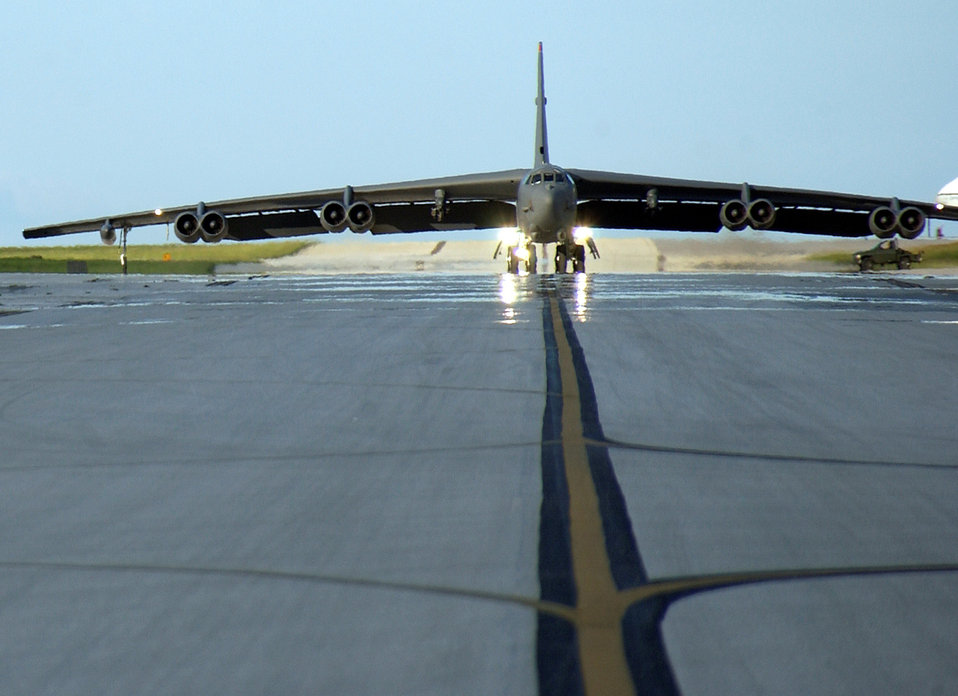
B-52s arrive at Andersen

A 23rd Expeditionary Bomb Squadron B-52 Stratofortress taxis on the airfield at Andersen Air Force Base, Guam, Aug. 30. The aircraft, from the 5th Bomb Wing at Minot AFB, N.D., is one of six scheduled to deploy to Andersen for four months.